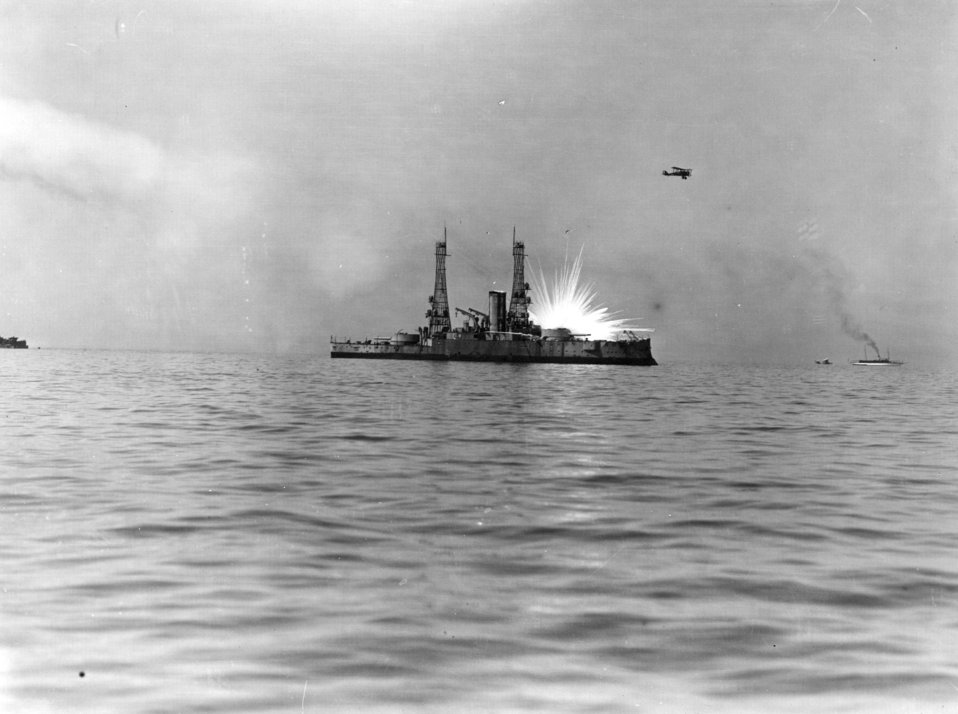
Bombing test

To prove the prowess of the air, Brig. Gen. Billy Mitchell used aircraft to bomb salvaged U.S. Navy ships during the 1920s.